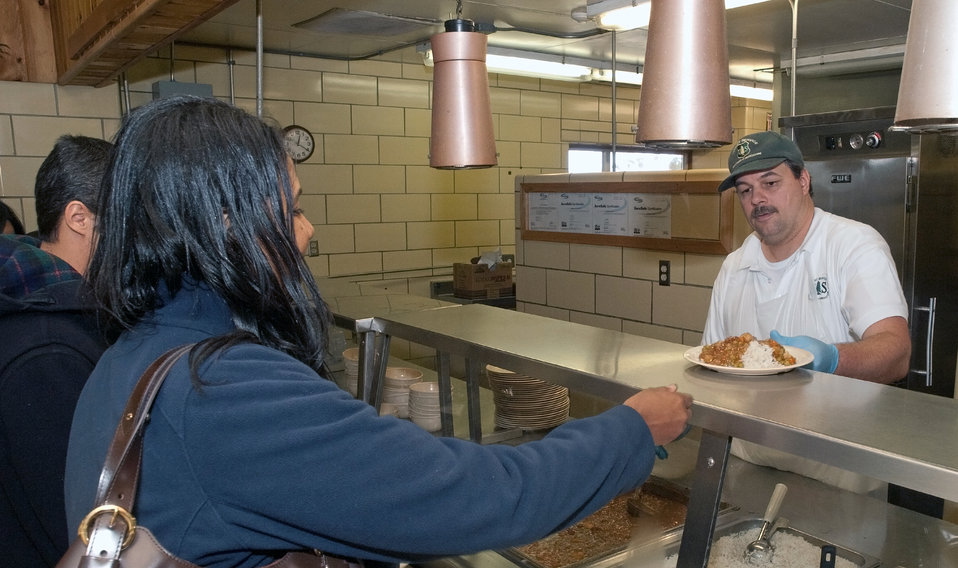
Forest Service chef Brad Schutt on the serving line at the Job Civilian Conservation Corp Center (JCCCC) in Harpers Ferry, WV on Nov. 8, 2012. The US Forest Service manages 28 Job Corps Civilian Conservation Centers.